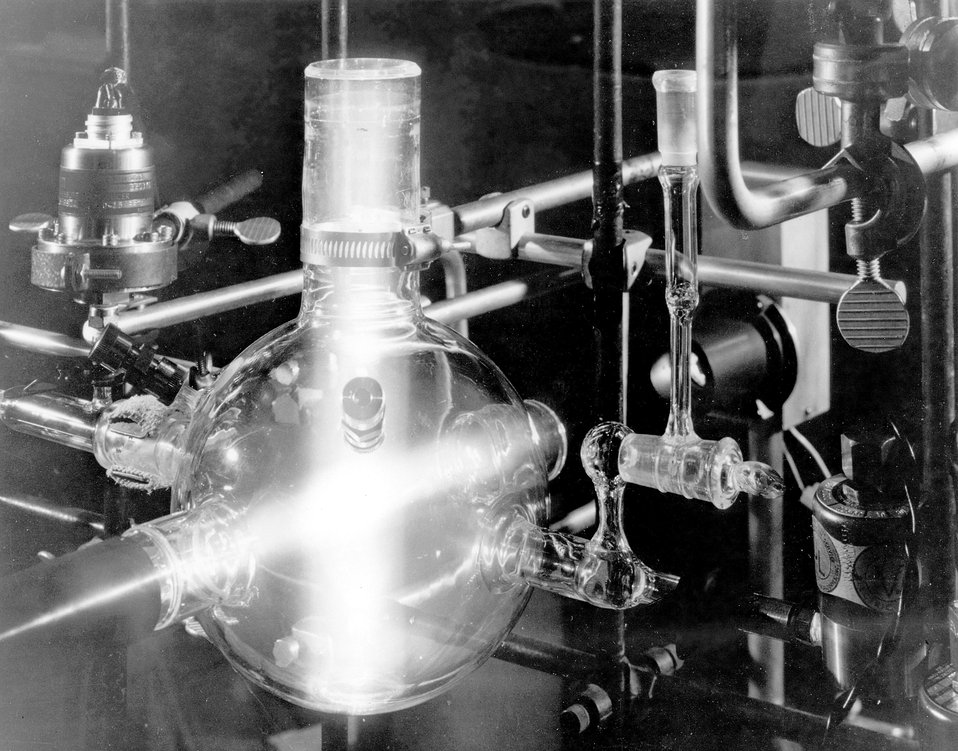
Measuring the formation of condensation nuclei from sulfur dioxide under the influence of the ultraviolet component of sunlight. Photo shows the fog formation in the reaction discriminator flask during a one-second expansion.
c.1974